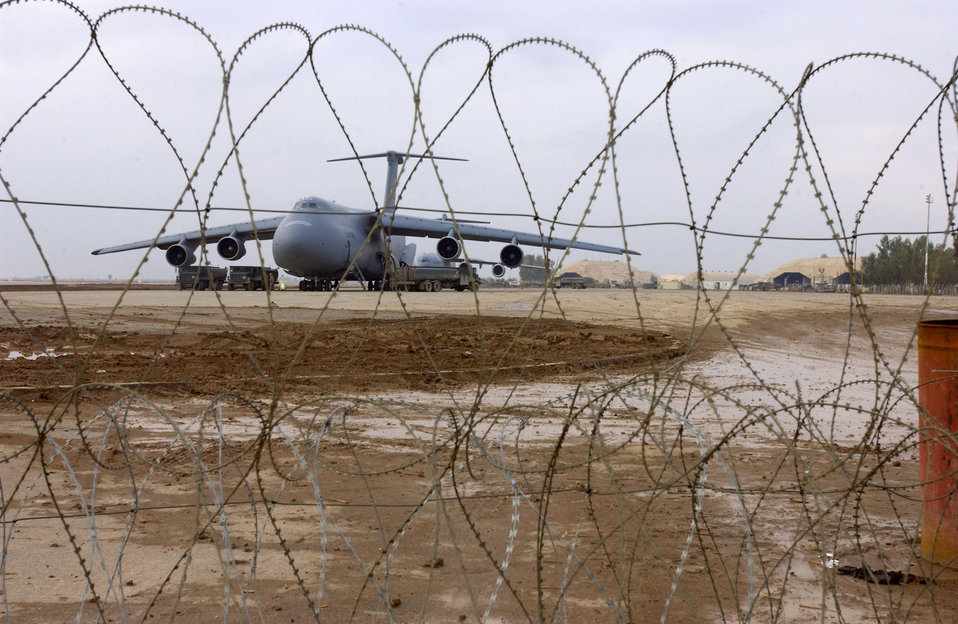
Behind the wire

BALAD AIR BASE, Iraq -- A C-5 Galaxy sits on the ramp here Nov. 27. The runway is large enough to allow the aircraft to use the airfield, which reduces the base's dependence on ground-vehicle convoys for supplies.